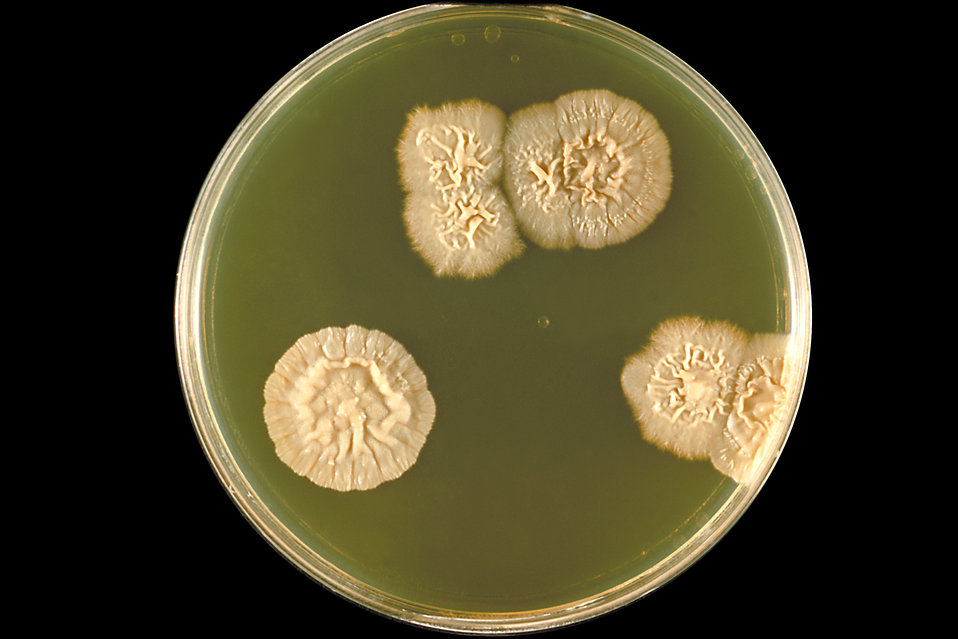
This is an image of a SABHI agar plate culture of Sporothrix schenckii grown at 20�C.